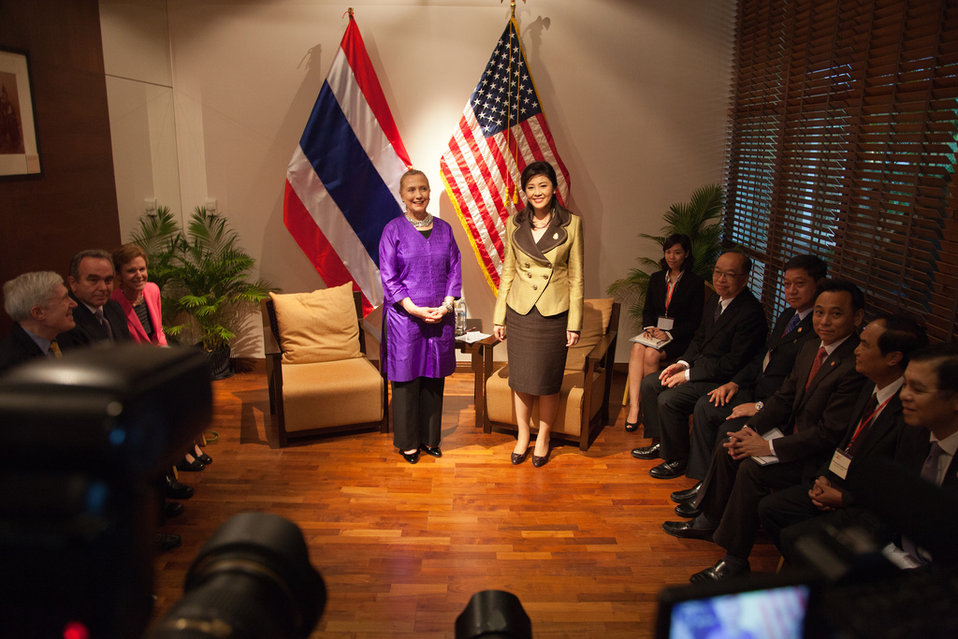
Secretary Clinton Meets With Thai Prime Minister Yingluck Shinawatra

U.S. Secretary of State Hillary Rodham Clinton meets with Thai Prime Minister Yingluck Shinawatra in Phnom, Penh, Cambodia, on July 13, 2012.